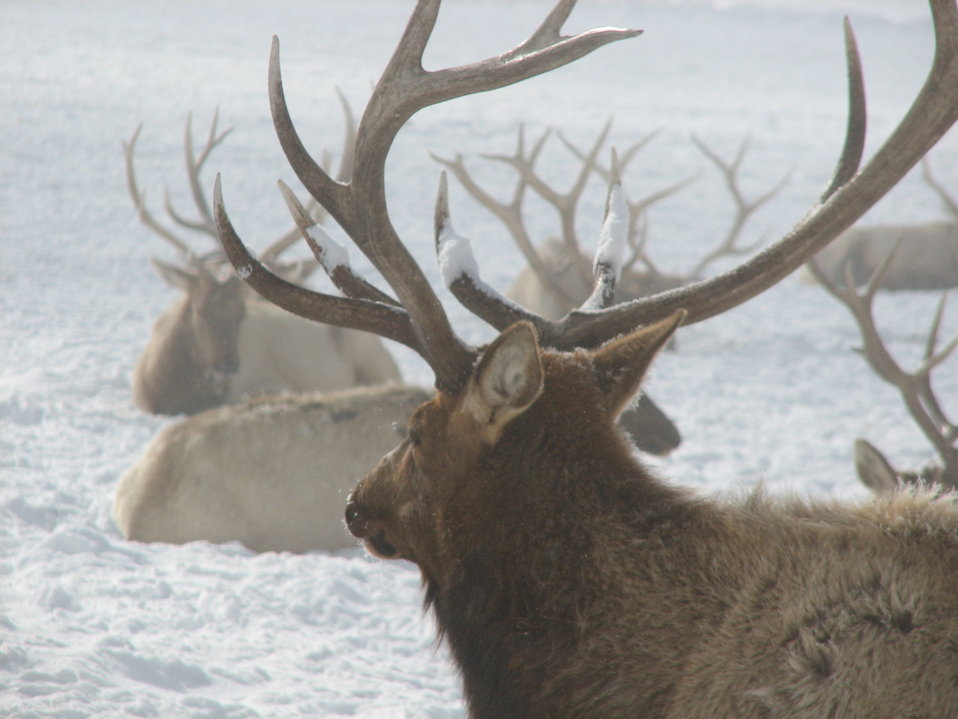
Bull Elk Close-Up

A group of bull elk lie in the snow in the early morning fog at the National Elk Refuge.